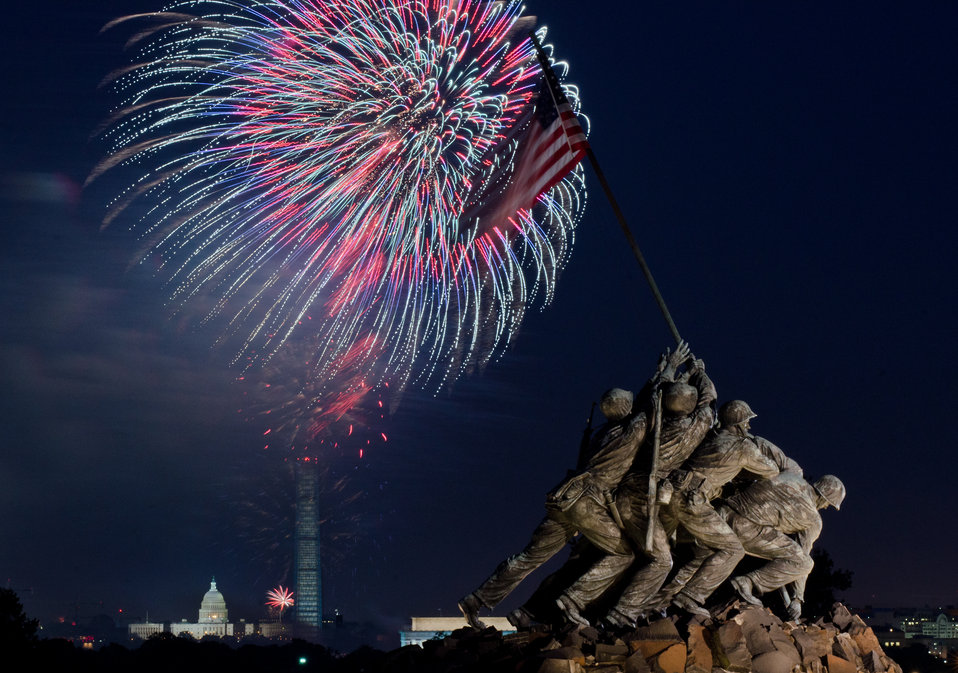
Independence Day celebration fireworks are seen from the Iwo Jima, U.S. Marine Corps Memorial in Arlington, VA on Jul. 4, 2013. In the distance are the Lincoln Memorial, the U.S. Department of Agriculture (USDA) Yates Building (dark red brick building), the Washington Monument (with scaffolding), and the U.S. Capitol building in Washington, D.C.